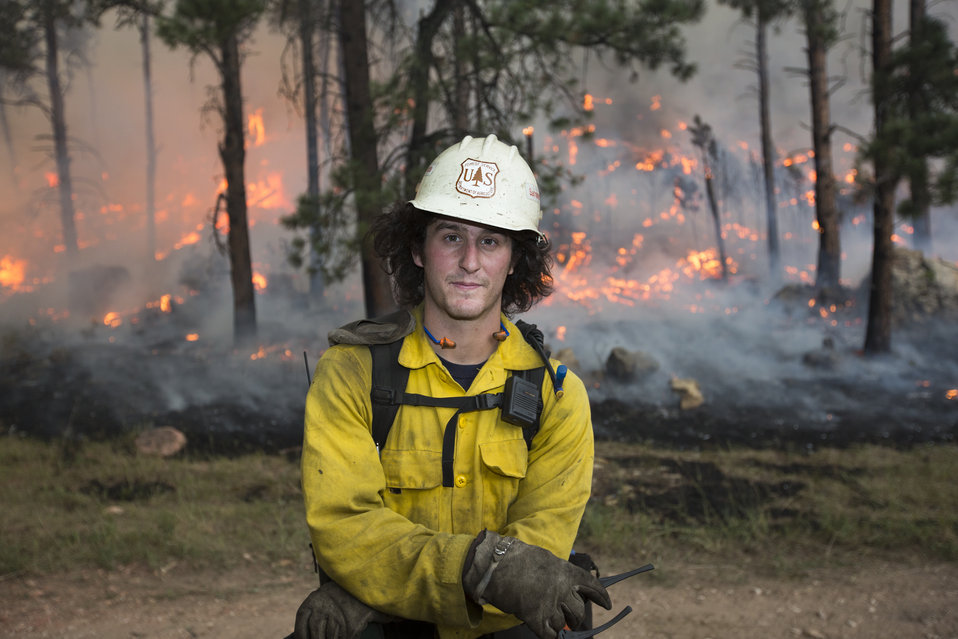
Sacramento Interagency Hotshot firefighter Dan Locicero from the Lincoln National Forest in New Mexico fights the Myrtle Fire in Custer, SD on July 22, 2012. The Sacramento Interagency Hotshot Crew (IHC) are a group of multi-skilled professional wild land firefighters specifically trained, organized, and equipped for rapid response to wildfire situations. The Sacramento IHC specialty is wildfire suppression, but is sometimes assigned other jobs, including search and rescue and disaster response assistance. When not busy fighting fires the Sacramento IHC work to meet resource goals on their home forest lands through thinning, prescribed fire implementation, habitat improvement or trail construction projects.